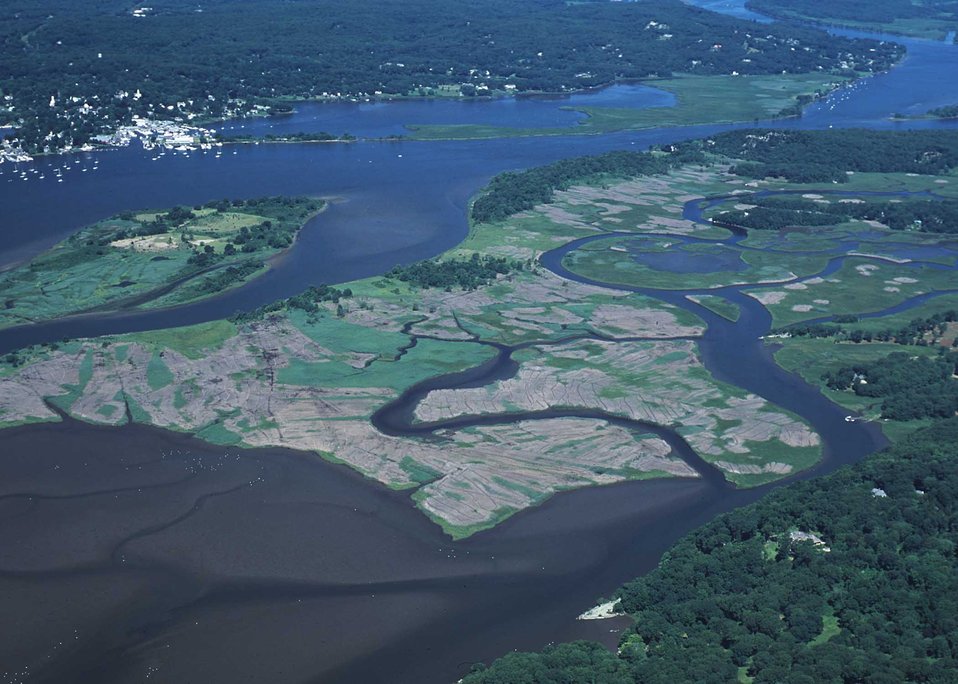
Connecticut River tideland habitat undergoing invasive plant control (light colored areas) and native plant community restoration.